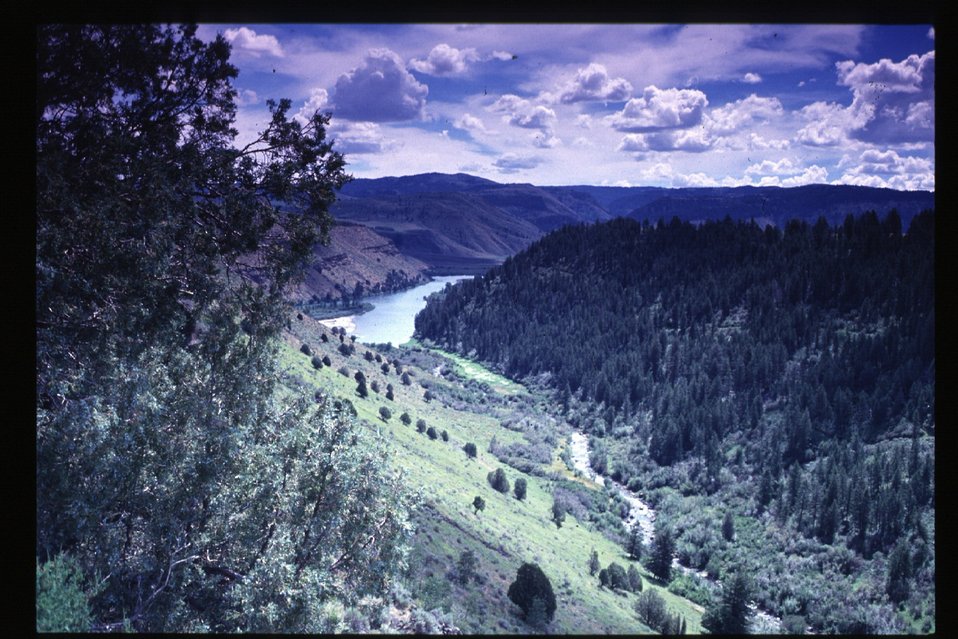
Sout Fork of Boise River Scenic Rangeland Four Rivers Field Office LSRD Lower Snake River District